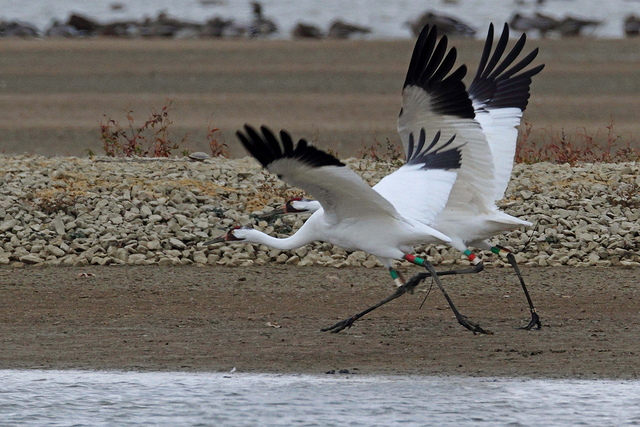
whooping crane pair

Patokah River National Wildlife Refuge, IN